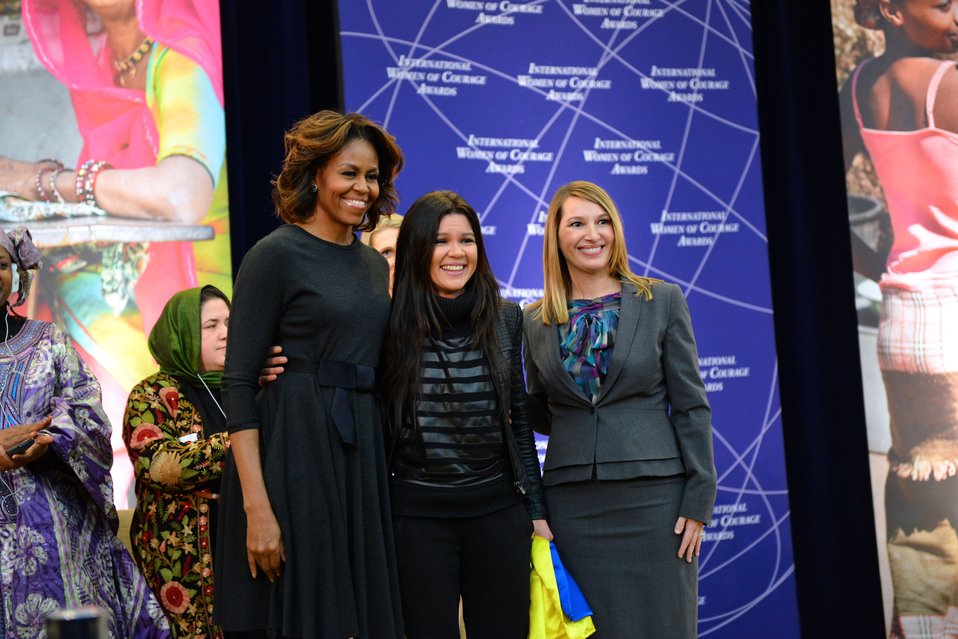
First Lady Michelle Obama and Deputy Secretary Higginbottom With IWOC Awardee Ruslana Lyzhychko of Ukraine

First Lady Michelle Obama and Deputy Secretary Heather Higginbottom pose for a photo with 2014 Secretary of State’s International Women of Courage Award Winner Ruslana Lyzhychko, a EuroMaidan volunteer and People’s Artist of Ukraine, at the U.S. Department of State in Washington, D.C., on March 4, 2014.